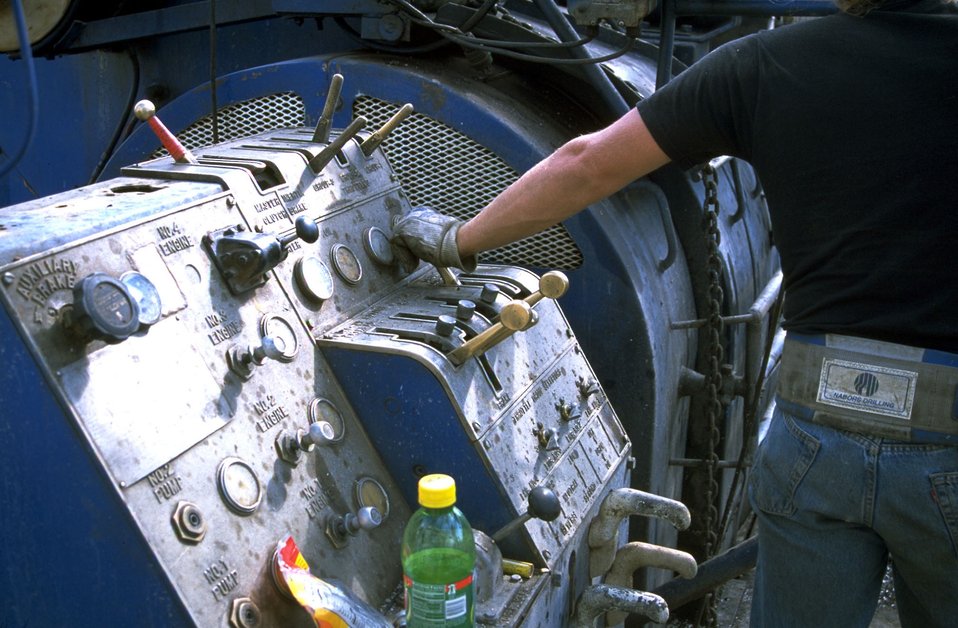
Drill controls of drilling rig